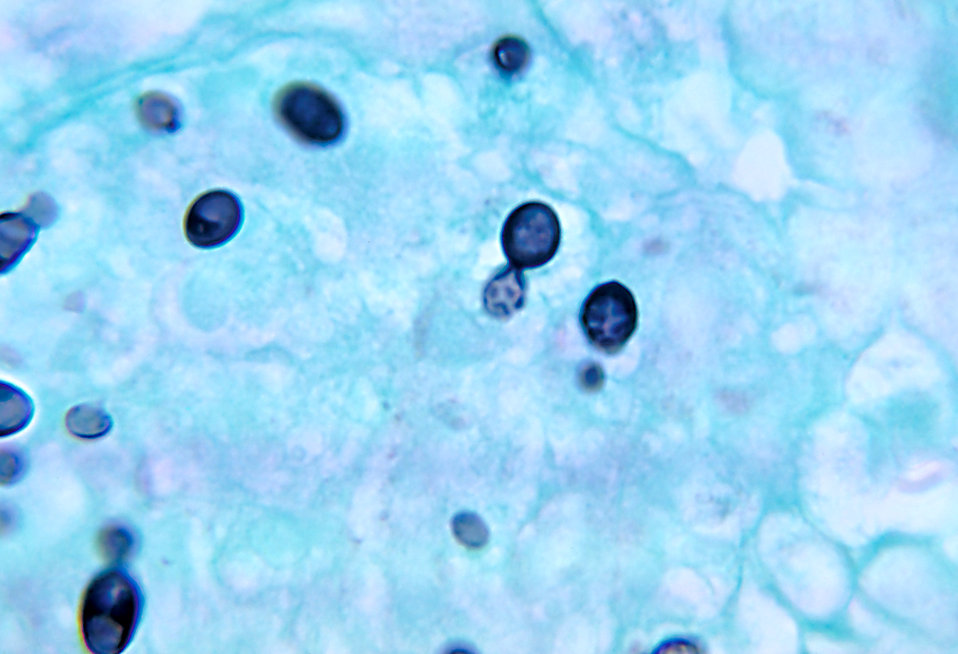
Note the histopathologic changes seen in histoplasmosis due to Histoplasma capsulatum var. duboisii.